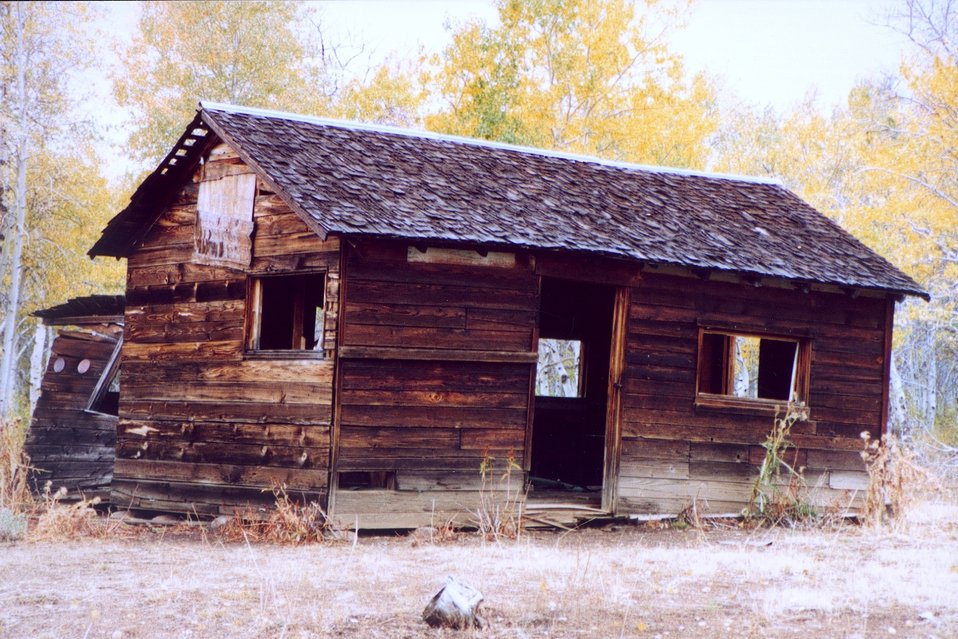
Nye Cabin, Steen's Mountain.